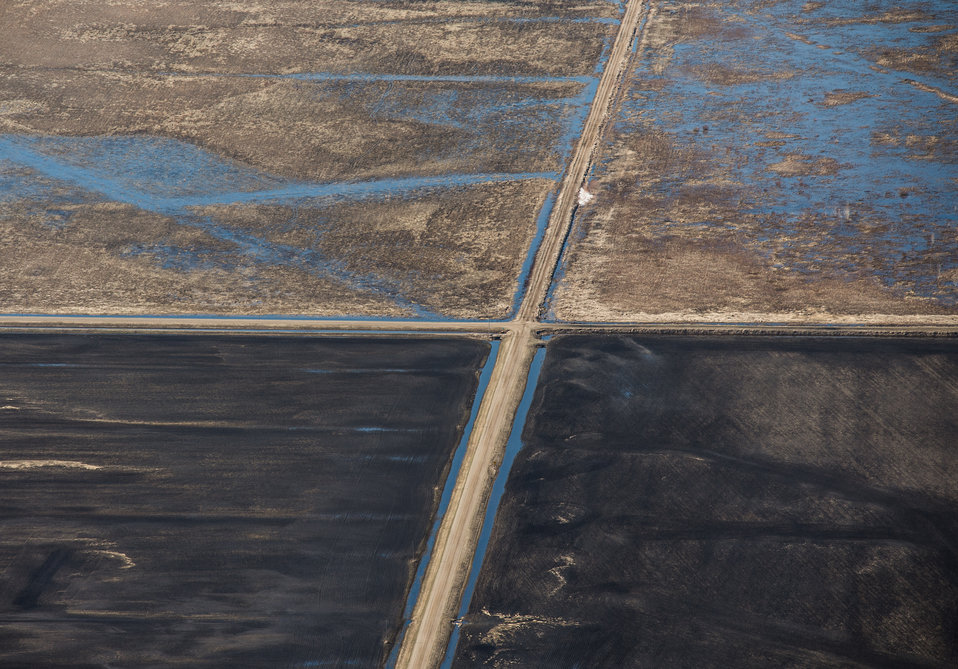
Ehlert U.S. Department of Agriculture (USDA) Natural Resources Conservation Service (NRCS) Wetland Reserve Program (WRP) in Wilkin County, MN, on Tuesday, April 30, 2013. For information about this and other programs from the USDA Red River Basin Initiative (RRBI) please see www.mn.nrcs.usda.gov/news/features13/RRBI.html.